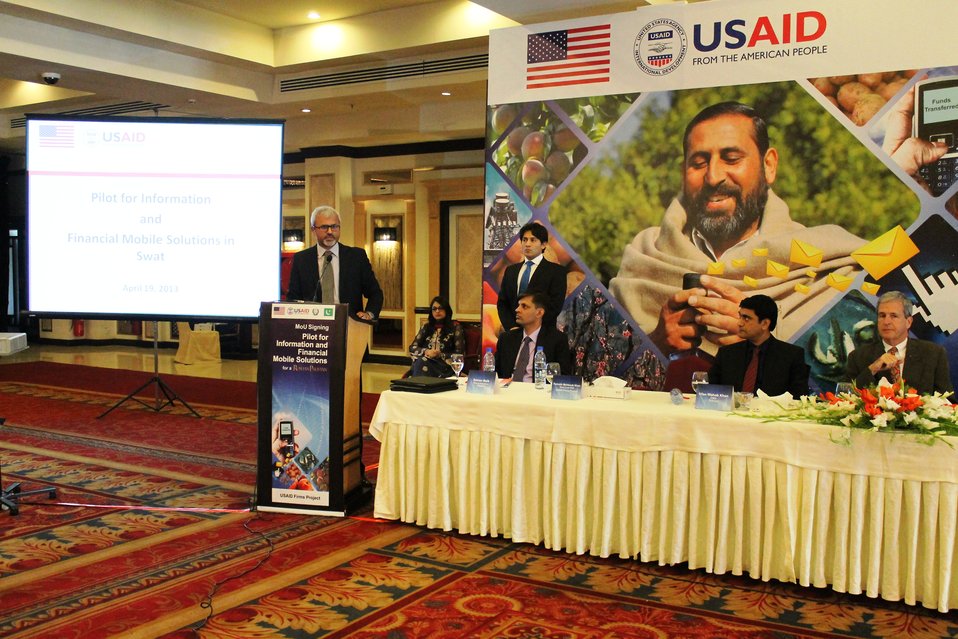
Pilot for Information and Financial Mobile Solutions - MoU Signing

Mr. Farrukh Mehboob Khan, Acting Chief of Party, USAID Firms Project shared important insights into the pilot program with the audience